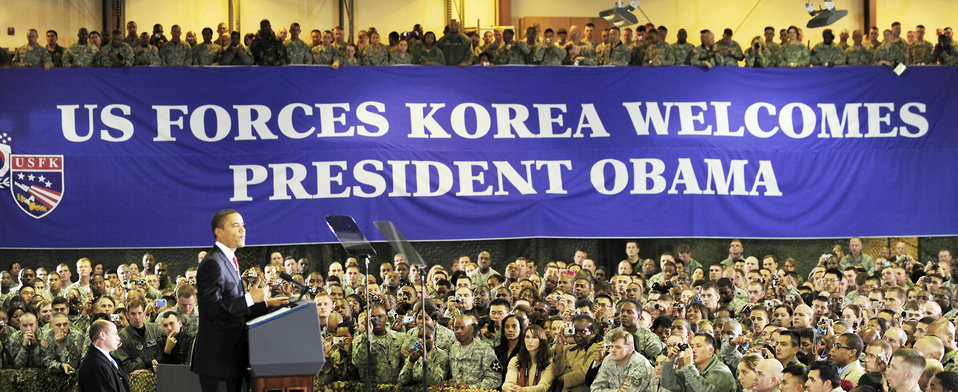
President Obama holds troop rally at Osan

President Barack Obama addresses more than 1,500 U.S. servicemembers Nov. 18, 2009, at Osan Air Base, South Korea. This was President Obama's last stop of his Asian visit.